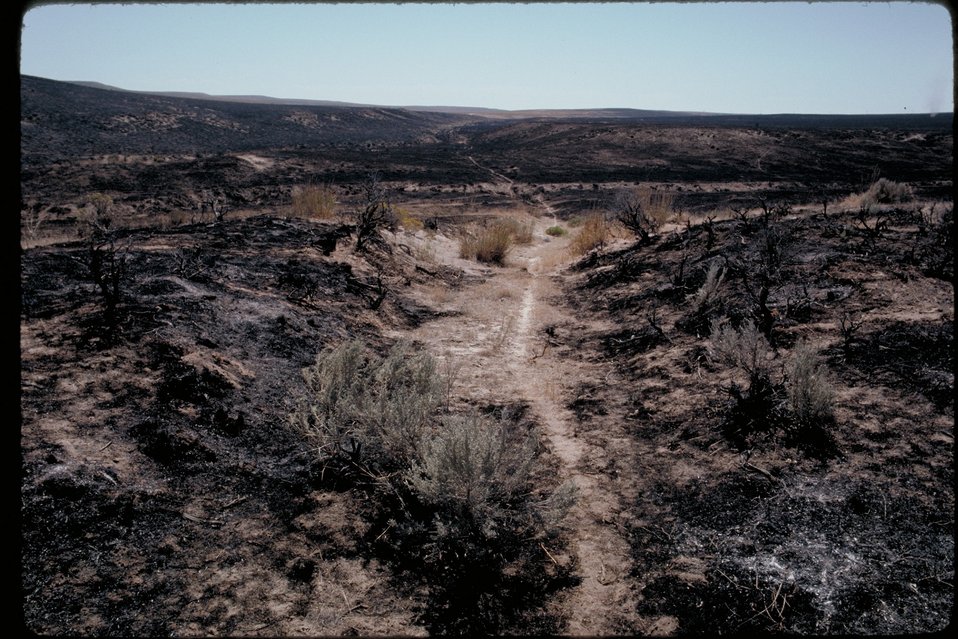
Oregon Trail Flink Mesa Fire Cassia Gulch Cultural resource Historic area LSRD Lower Snake River District